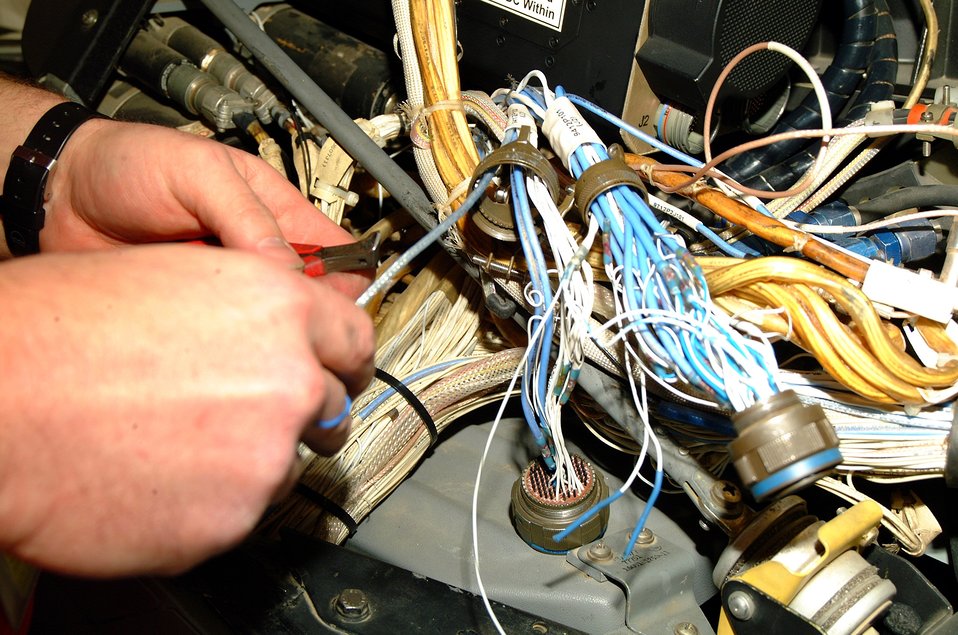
Whiteman A-10s upgrading with

Air Reserve Technician Tech. Sgt. Mike Price attaches wires during the installation of a new